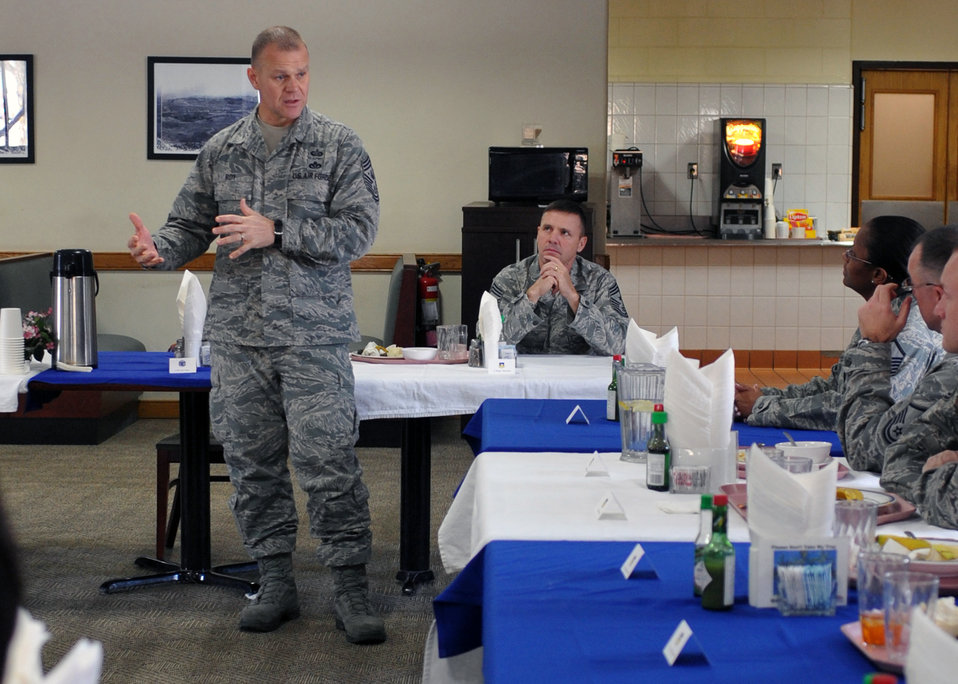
CMSAF visits Osan Air Base

Chief Master Sgt. of the Air Force James Roy addresses 51st Fighter Wing Airmen, Dec. 31, 2010, at Osan Air Base, South Korea. Chief Roy discussed issues regarding enlisted perspective and key issues across the Air Force.